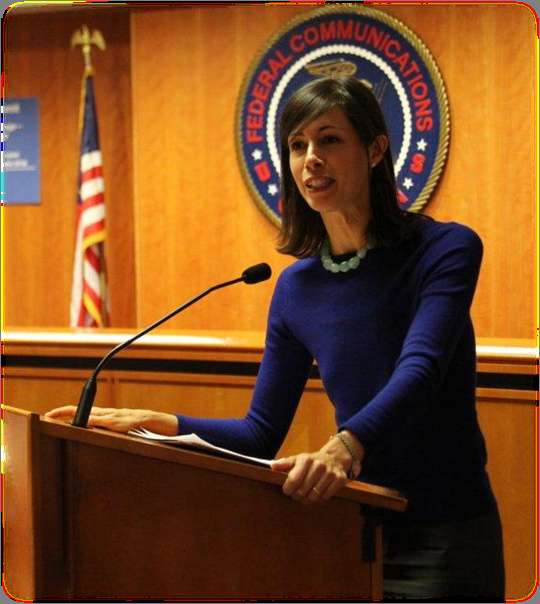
Commissioner Jessica Rosenworcel, FCC